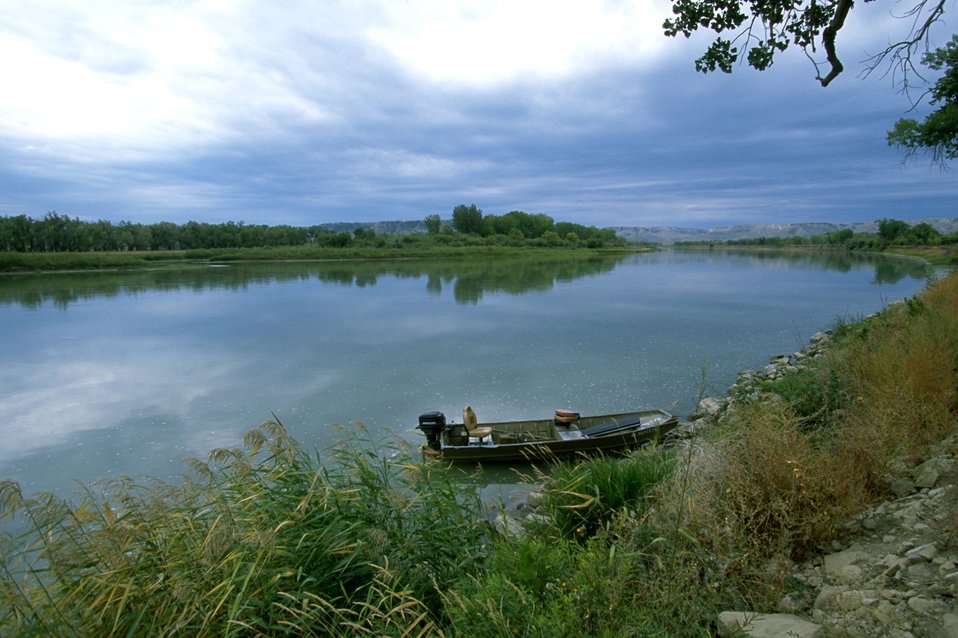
Judith Landing on the Missouri River north of Winifred